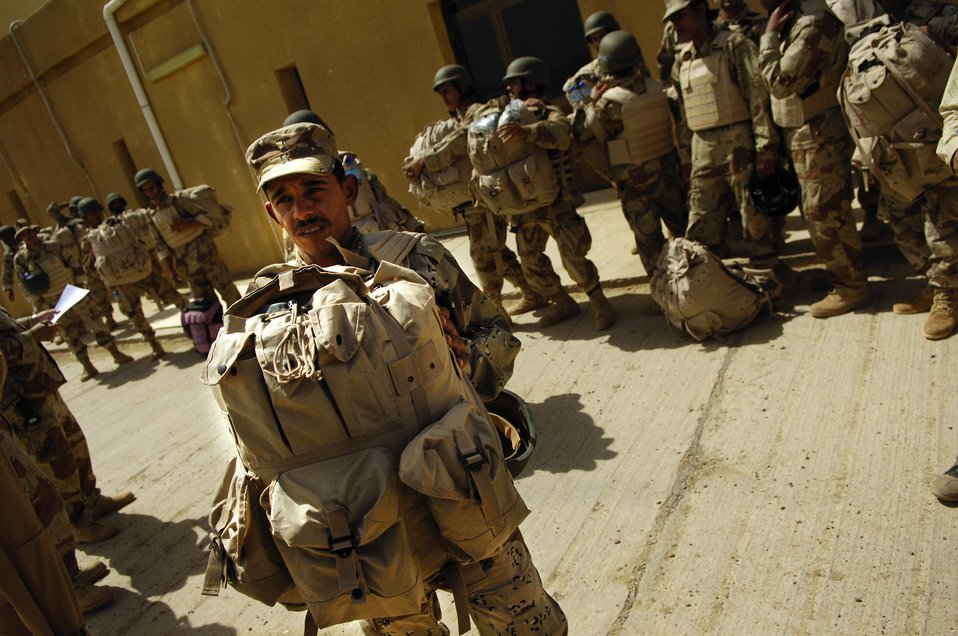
Iraqi air force in the fight

A member of the Iraqi army boards a bus that will take him to an Iraqi air force C-130 Hercules before a March 30 flight to Basra, Iraq, at New Al Muthana Air Base, Iraq. All processing, loading and transporting of the Iraqi troops is being conducted by the Iraqi air force.